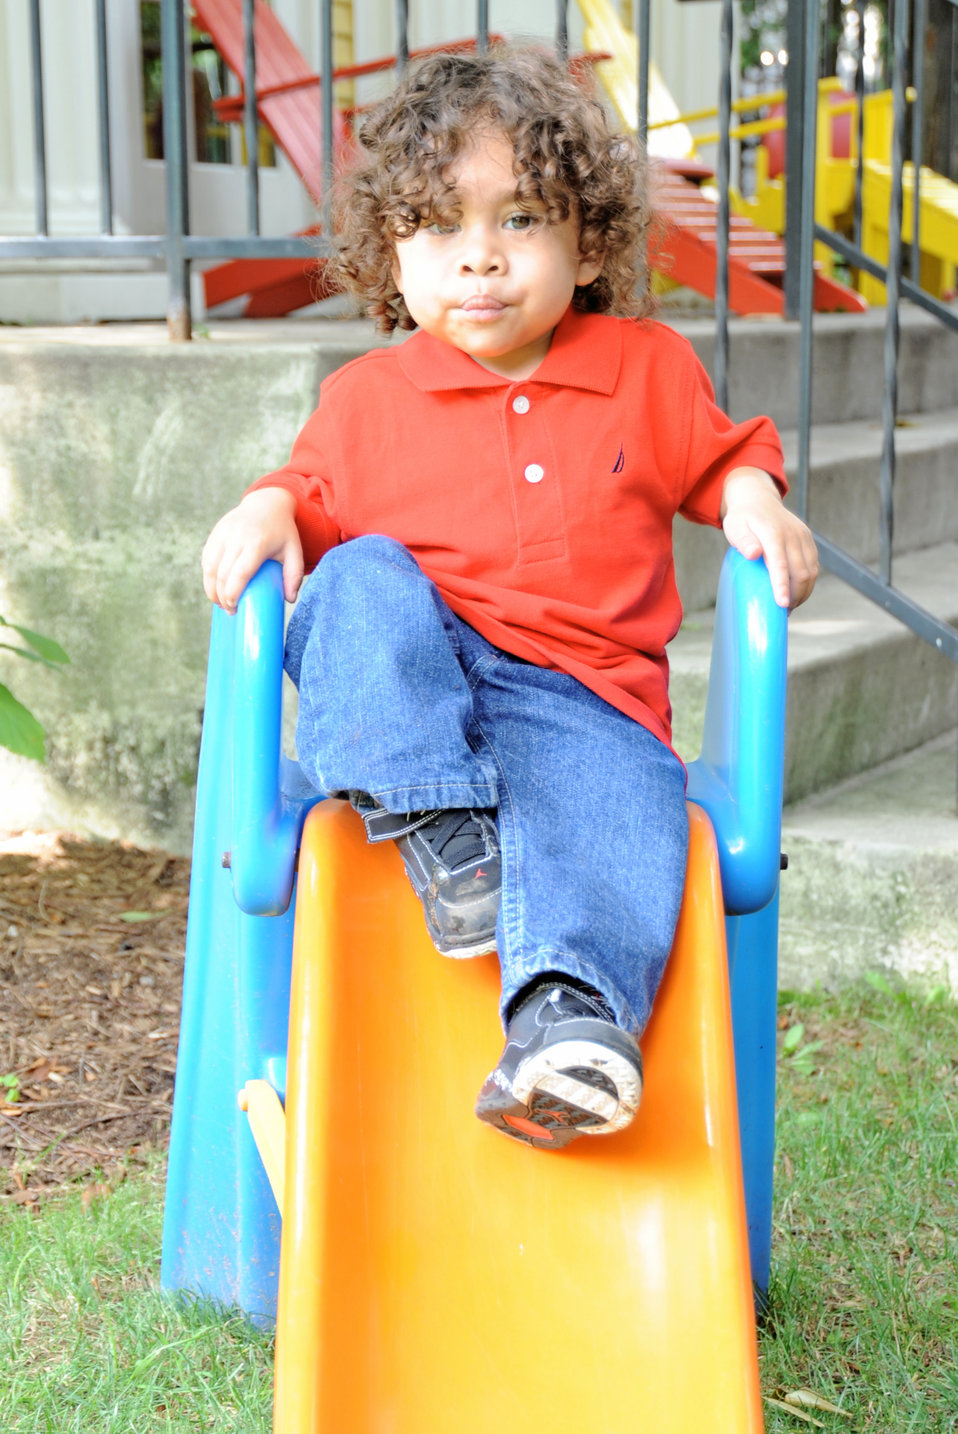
Genghis Webb plays on the slide in the backyard of the Ronald McDonald House July 20, 2010, in New Haven, Conn. Ghengis and his family have been staying at the Ronald McDonald House following his liver transplant surgery in April, when his father, Senior Airman Mario Webb, donated 20 percent of his liver to him. Airman Webb is assigned to the 23rd Special Tactics Squadron at Hurlburt Field, Fla.